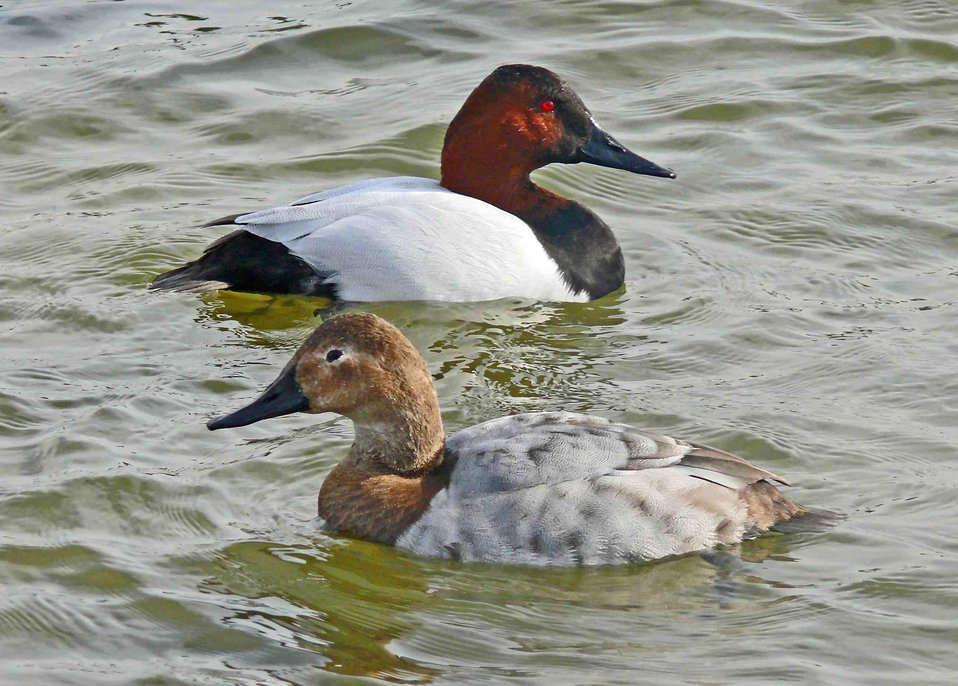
ducks at Bear River

Bear River Migratory Bird Refuge, UT
Nov. 7, 2011